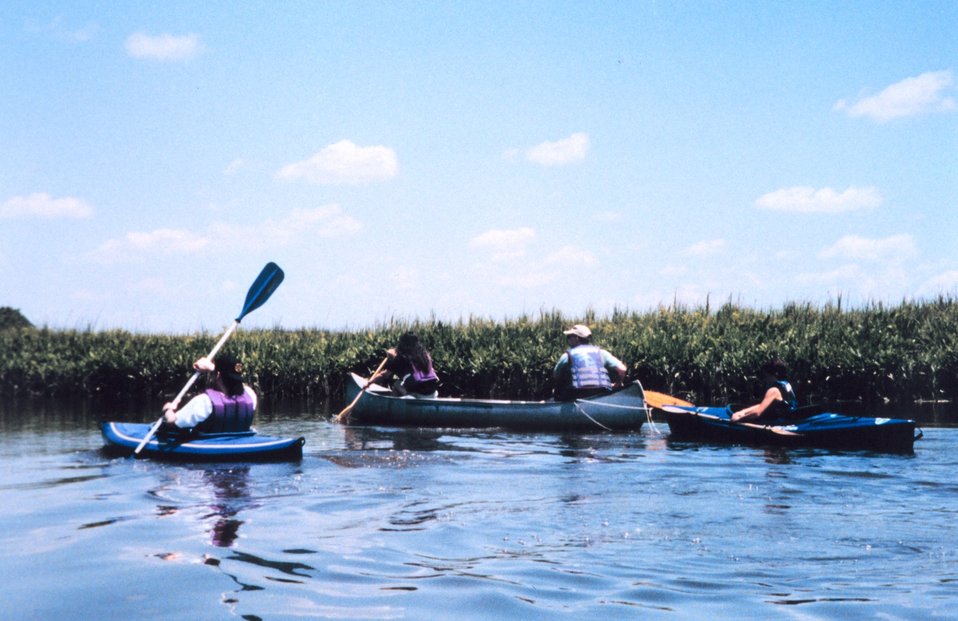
National Oceanographic Data Center employees at sea - kayaking along the Patuxent River.